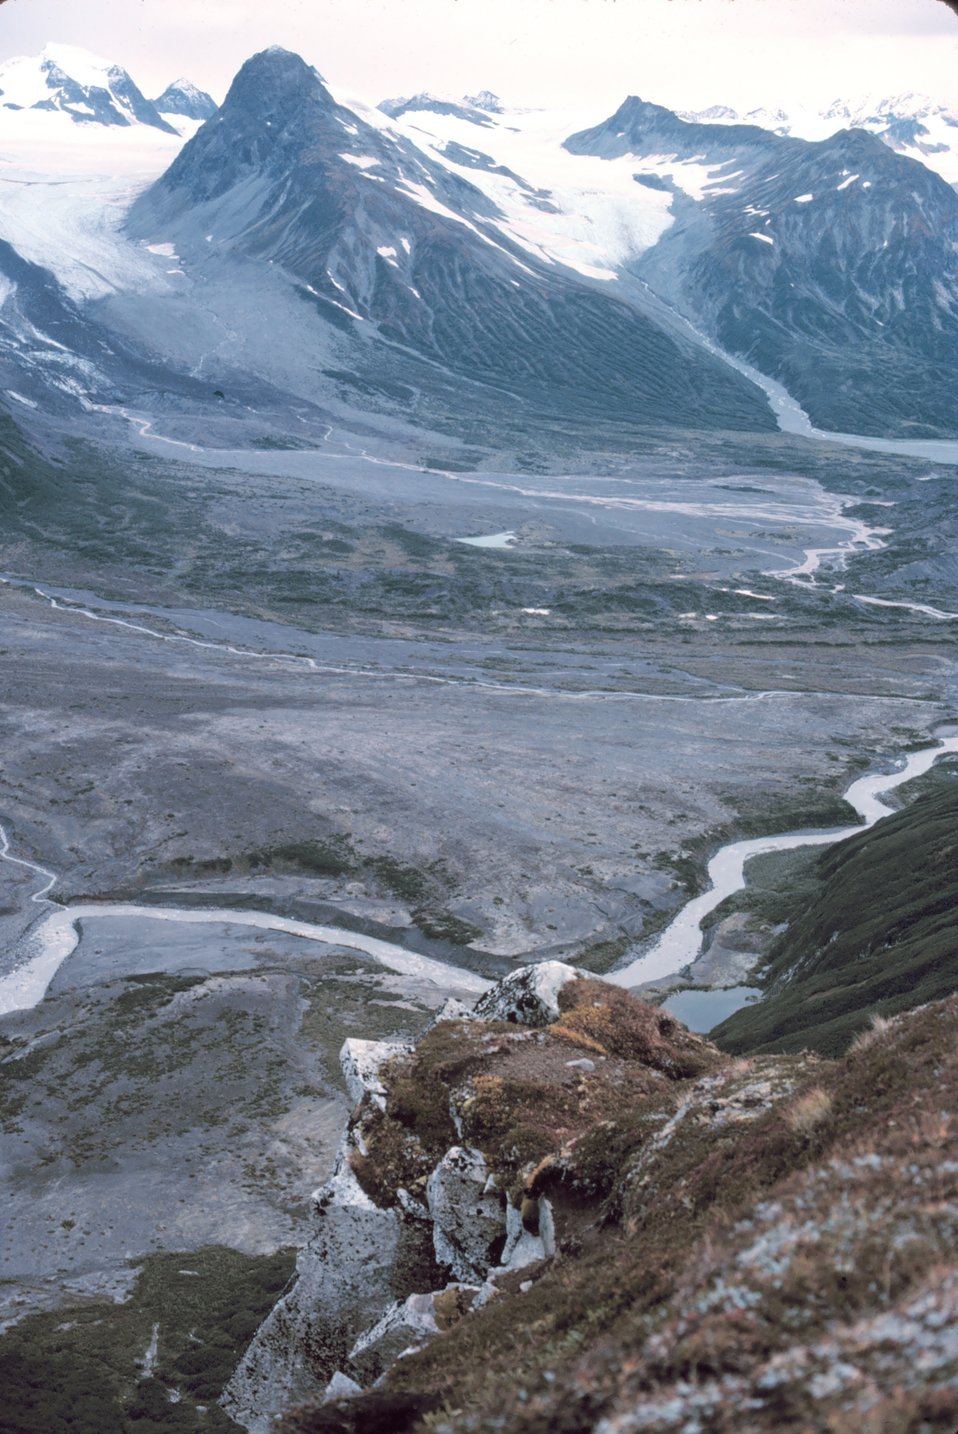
A lonely river winds its way to the sea.